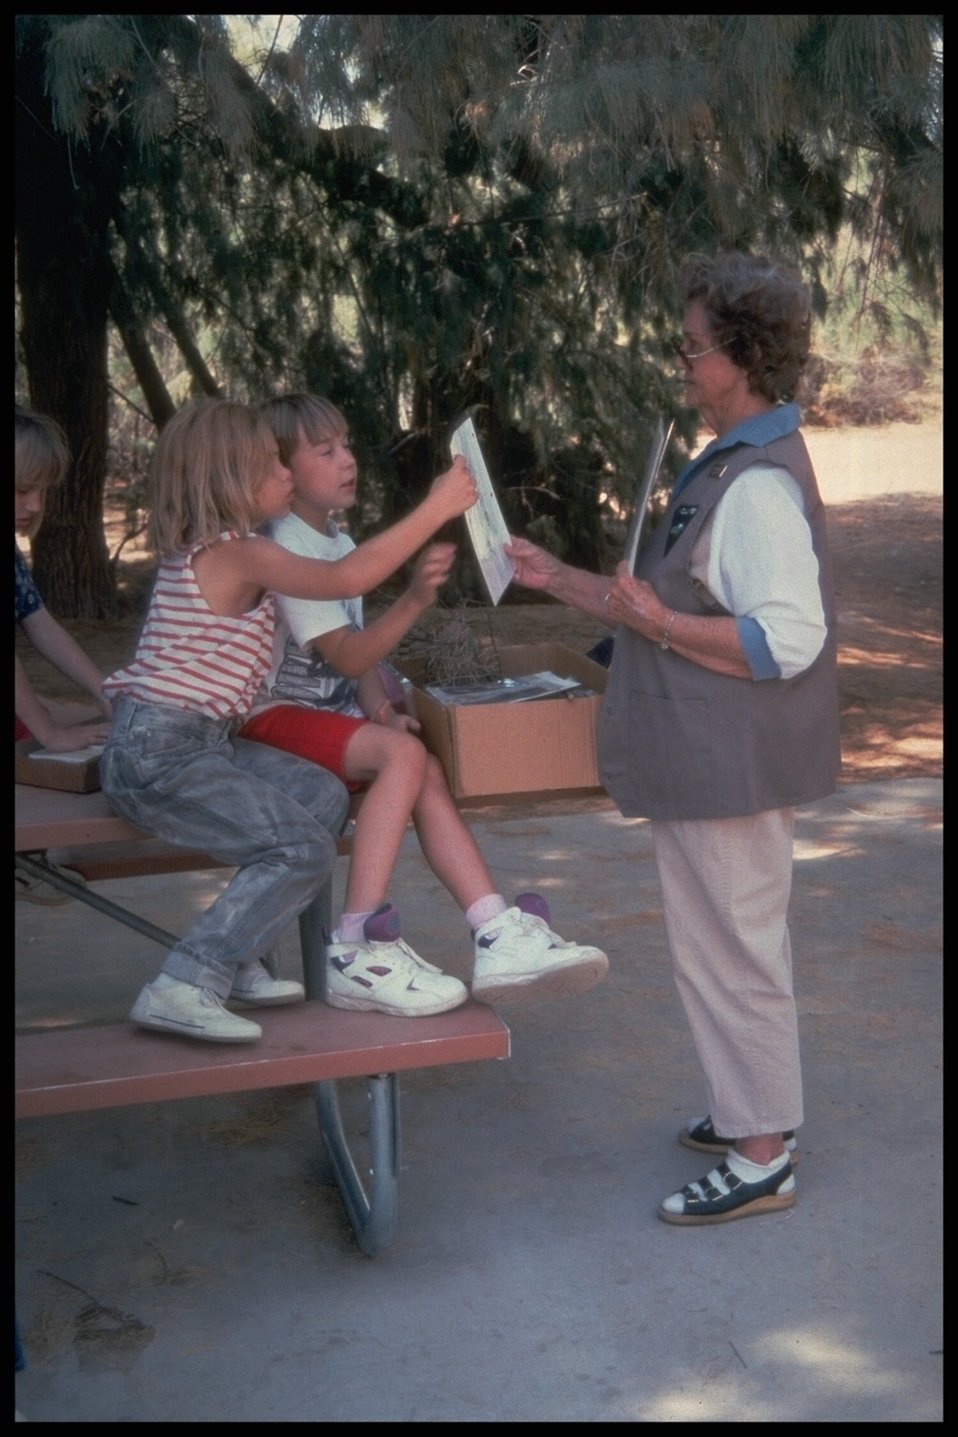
BLM volunteers reach out to children, teaching them the importance of caring for public lands.